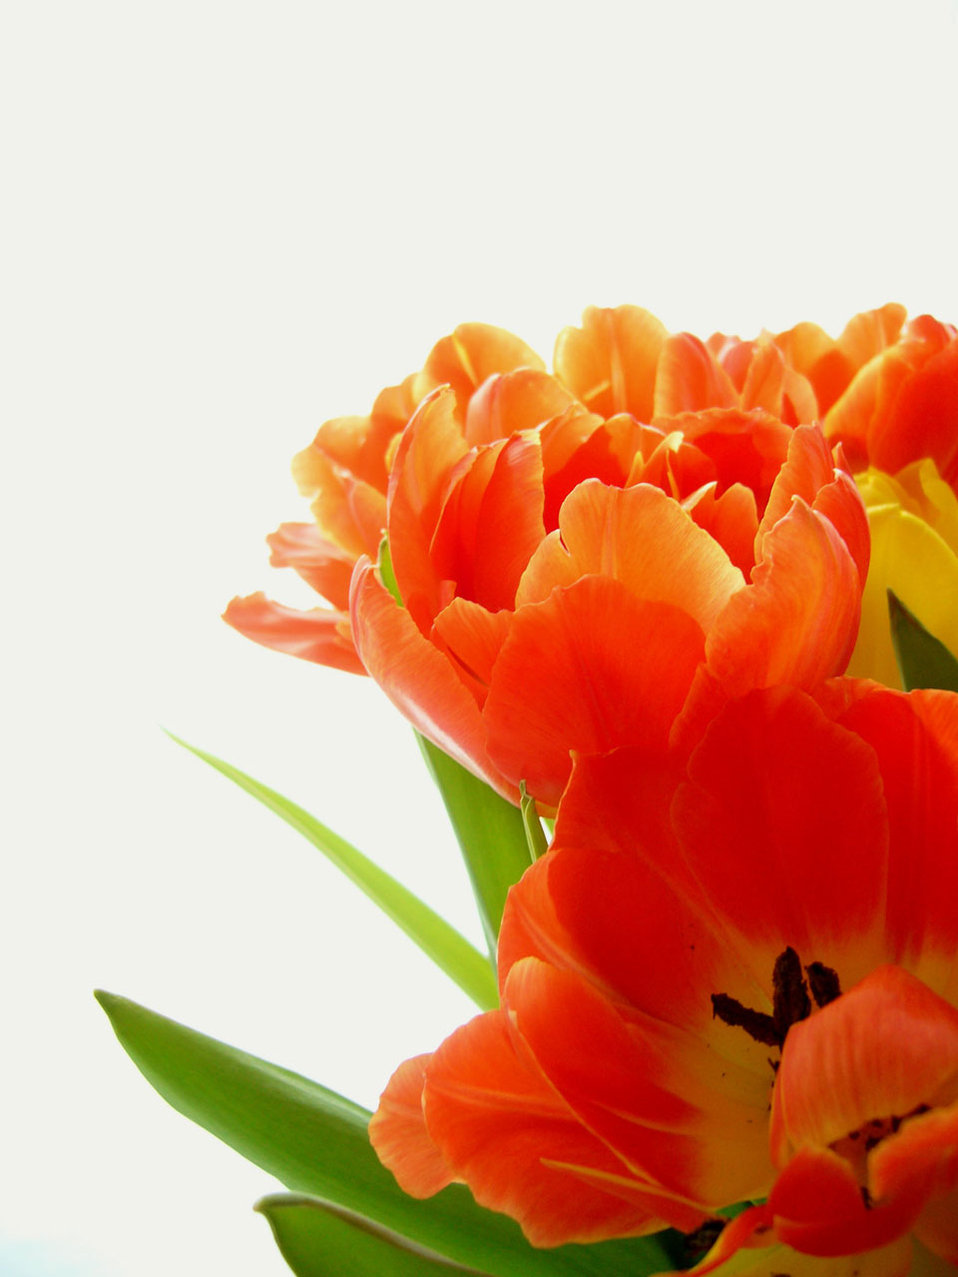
Tulips on white backround.